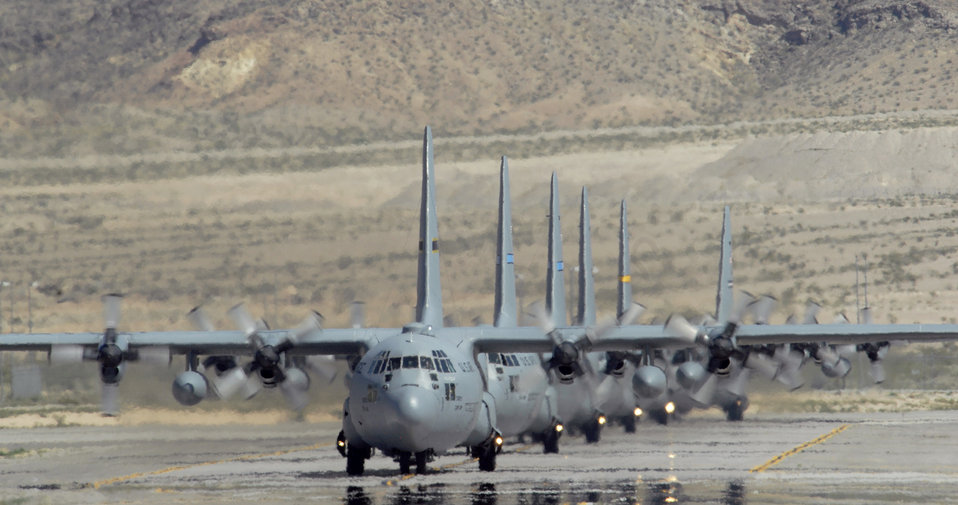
Mobility Air Forces exercise

A line of C-130 Hercules taxi at Nellis Air Force Base, Nev., during the Mobility Air Forces exercise May 19, 2010.